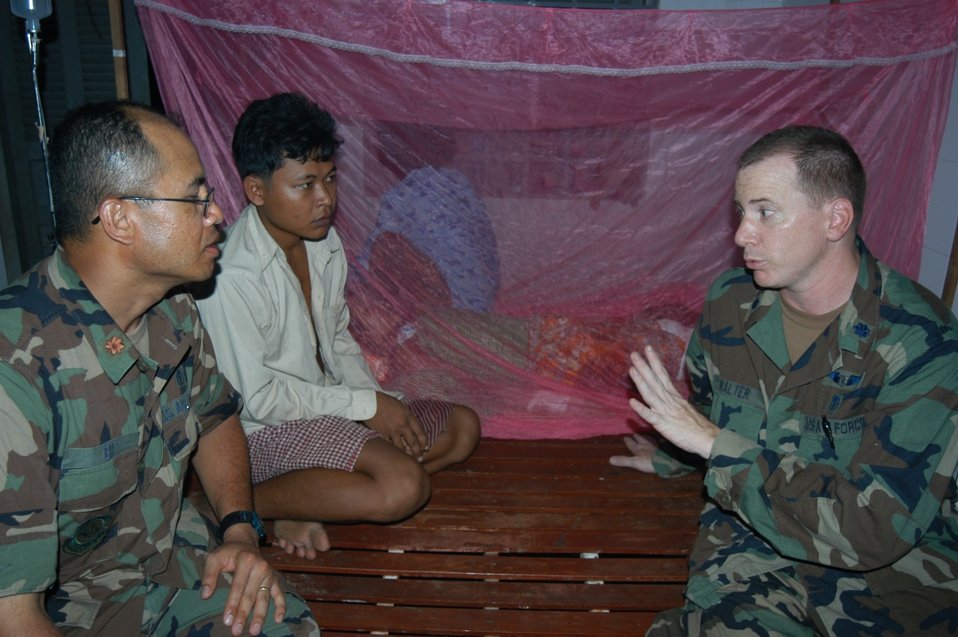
BRAVA mission

KEP, Cambodia -- Lt. Col. (Dr.) Jim Walter (right) explains treatment procedures through interpreter Maj. Vira Em to the husband of a burn victim here. The Airmen are part of a 20-member blast resuscitation and victim assistance mission.